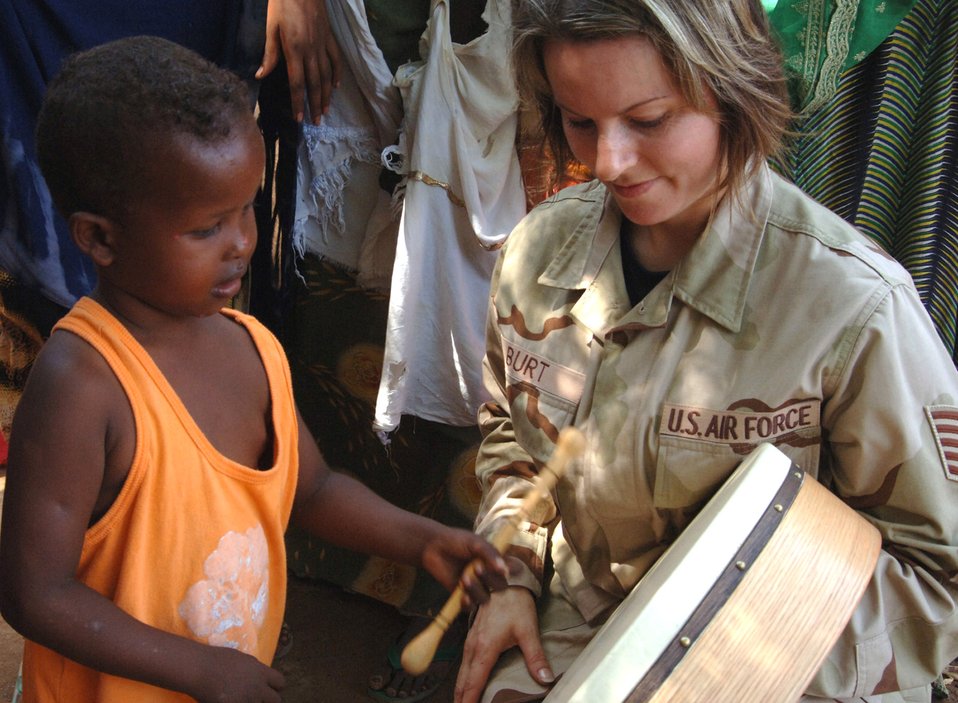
CENTAF band, Marines entertain Damerjog villagers

Tech. Sgt. Sherry Burt shows a child from the village of Damerjog, Djibouti, the djembe, an Irish drum, after performing with the U. S. Central Command Air Forces Expeditionary Band the